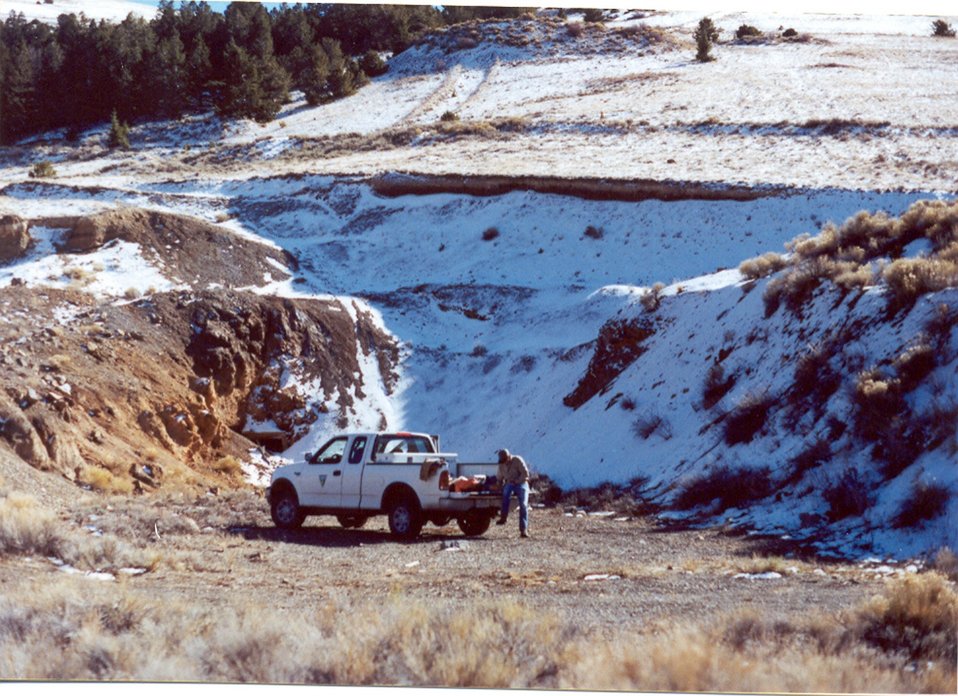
Abandoned Mine Salmon Field Office Upper Columbia Salmon Clearwater District UCSC